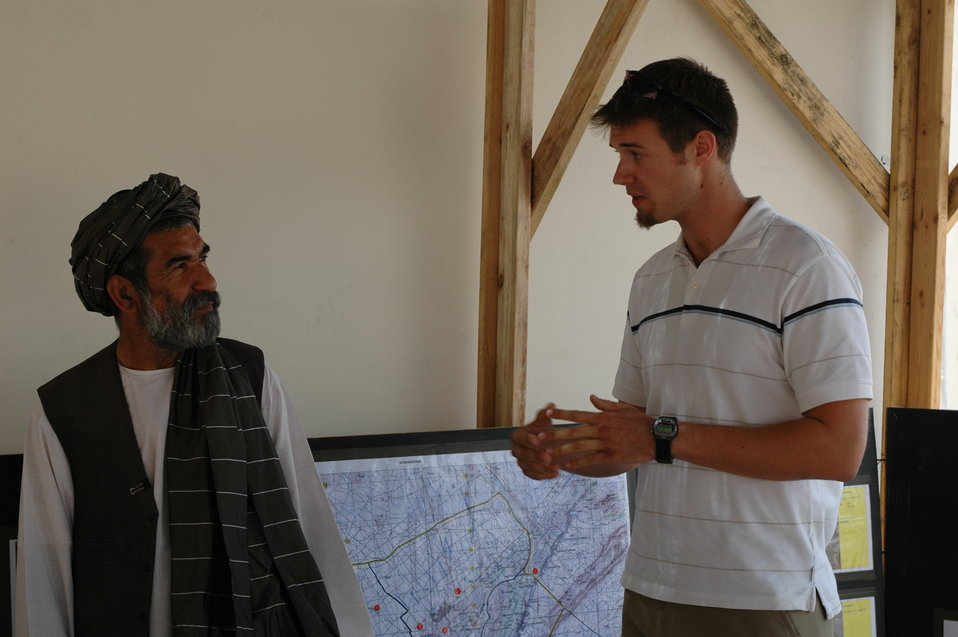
CODEL Berman